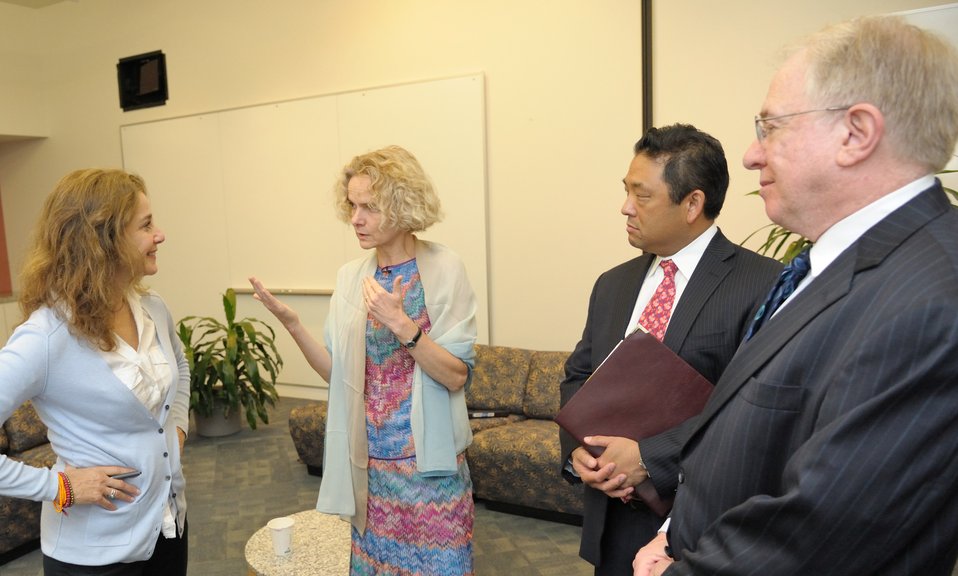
APP3 - NIH Aug 2011

(L-R): Debra Winger, Dr. Nora Volkow (NIDA Director), David Mineta (Deputy Director of Demand Reduction, White House Office of National Drug Control Policy), Dr. Kenneth Warren (Acting Director, NIAAA)